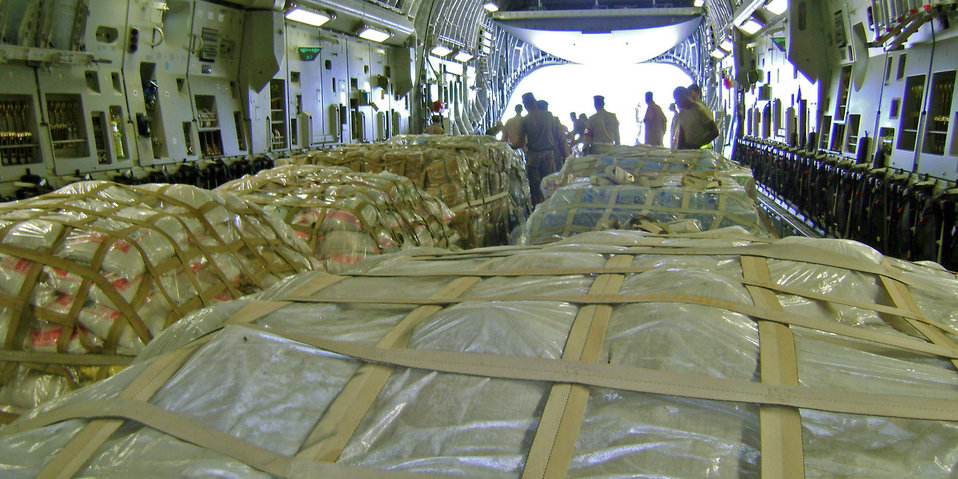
621st CRW

Bundles of humanitarian aid wait aboard a C-17 Globemaster III prior to delivery to flood victims in southern Pakistan.